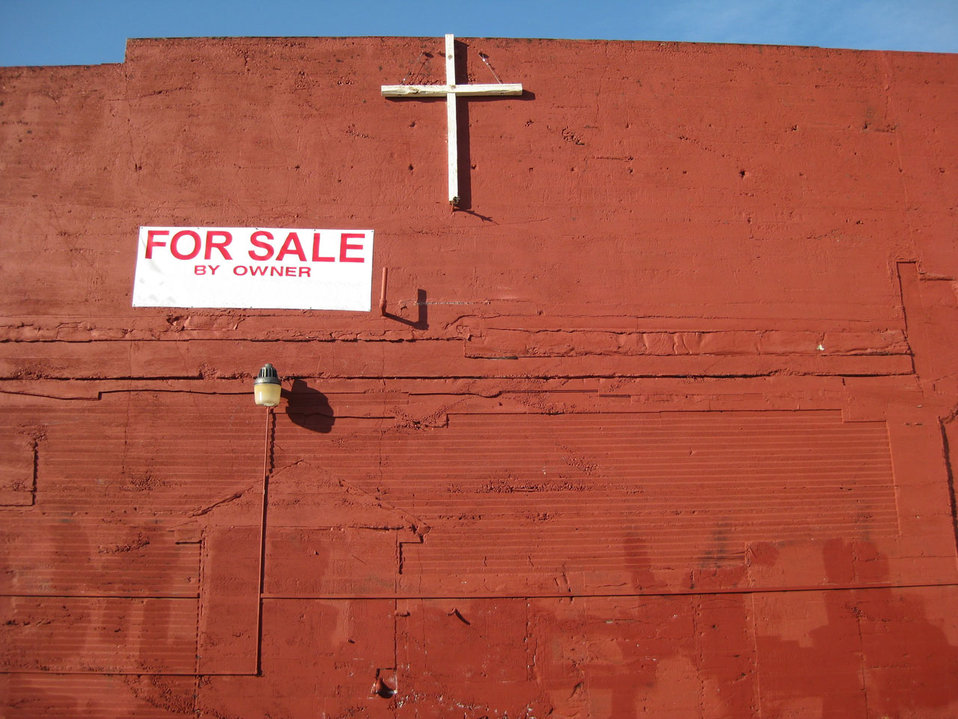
Religion for sale

Sign on bring wall religion for sale.